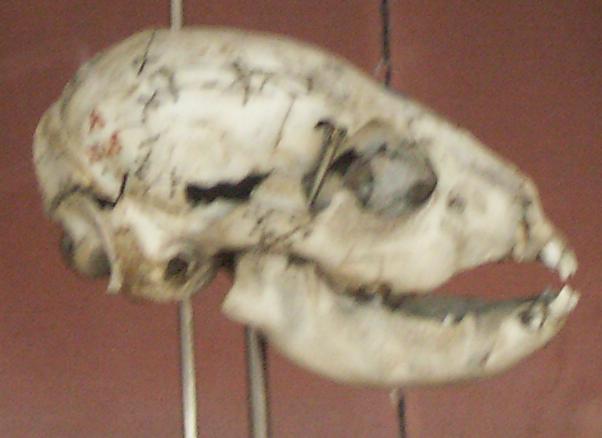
Skull of a newborn spotted hyena from the Muséum national d'histoire naturelle